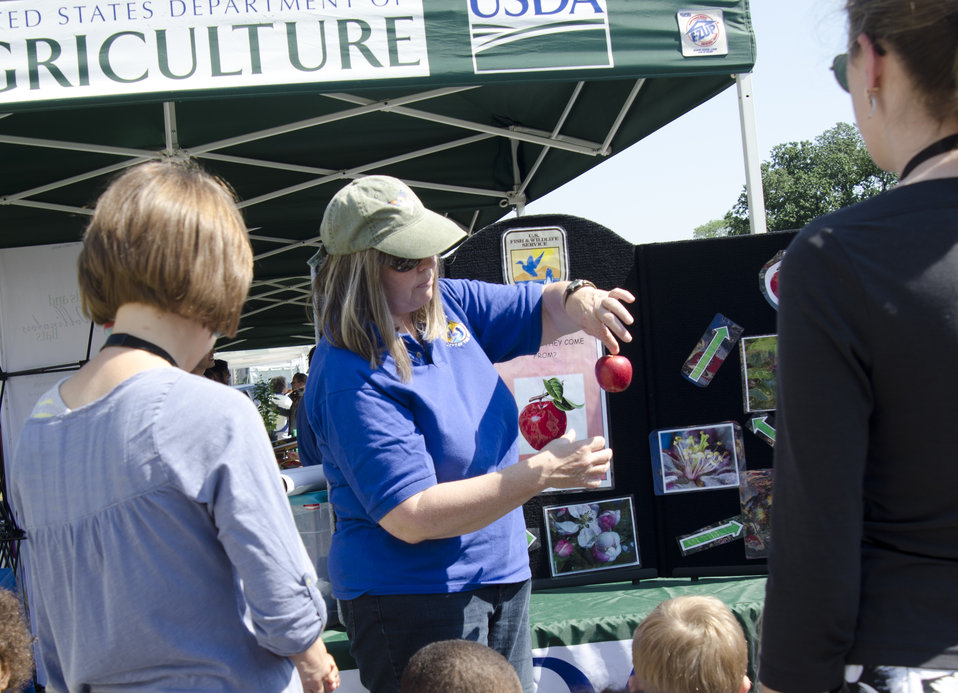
Peoples Garden Pollinator Display at the U.S. Department of Agriculture in Washington, DC, on Friday, June 21, 2013.